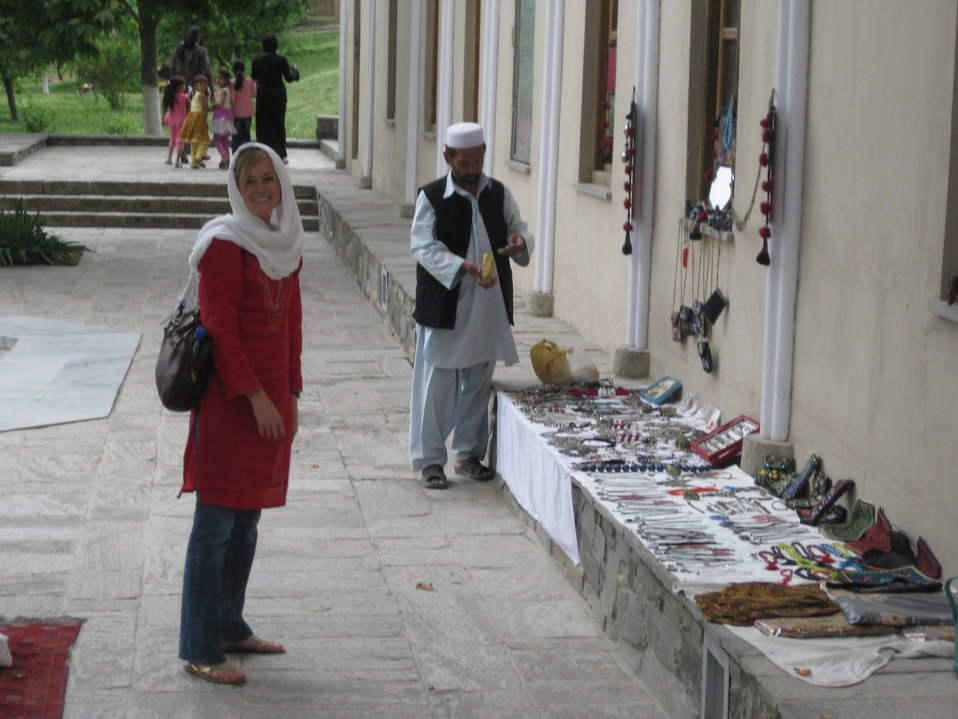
Afghan Youth Voices 104